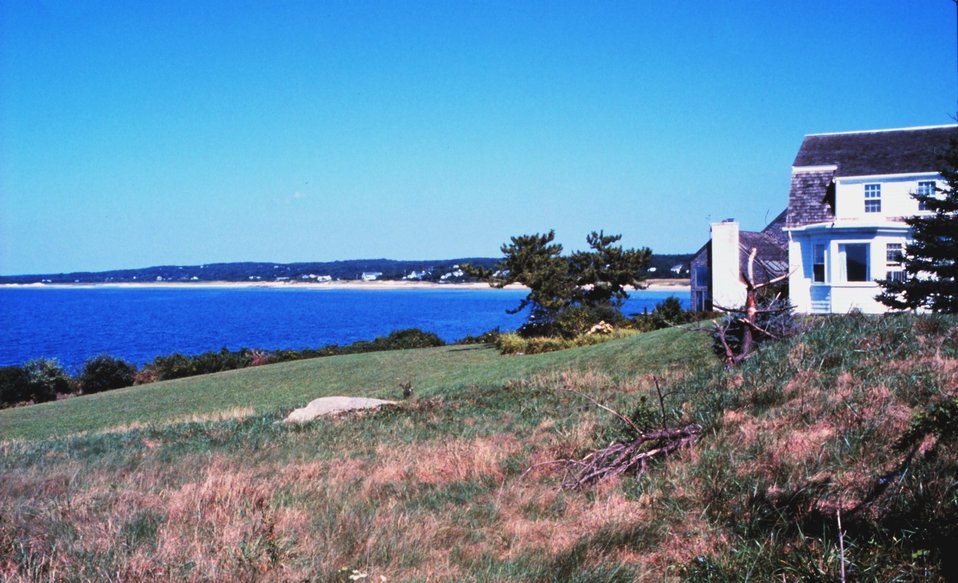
Buzzards Bay from Woods Hole